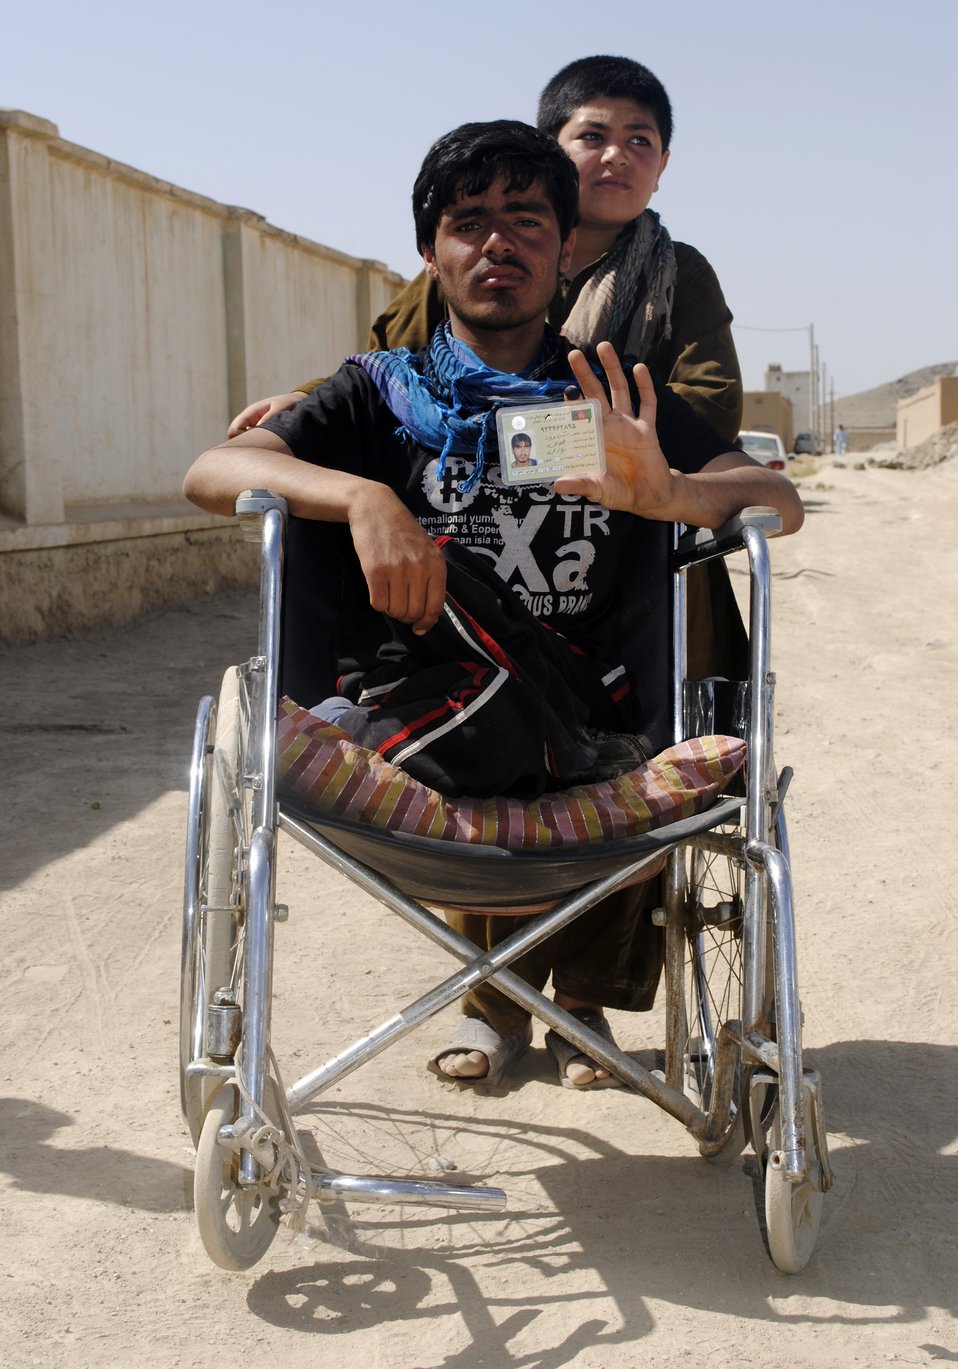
A disabled posing for a photo before to cast his vote in Deh Sabz district of Kabul province.

KABUL, Jun 14, 2014: A disabled posing for a photo before to cast his vote in Deh Sabz district of Kabul province.
PAJHWOK/Basir